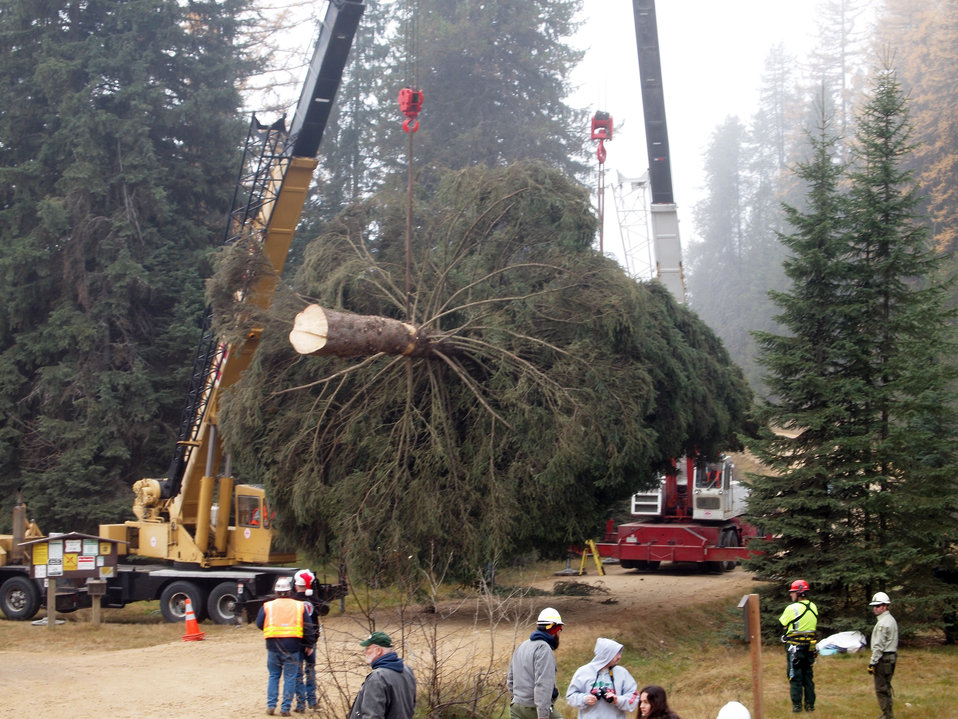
The superintendent of the capitol grounds selected an 88-foot tall Engelmann spruce from the Colville National Forest in Washington as the official 2013 Capitol Christmas Tree. The tree was harvested on Nov. 1, 2013.